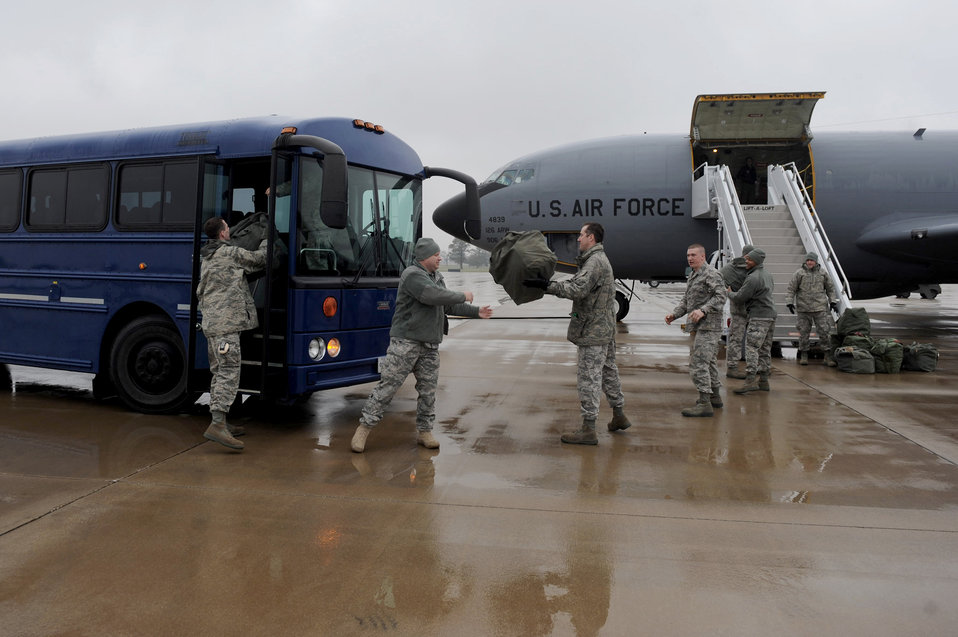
Guardsmen deploy in support of Operation Odyssey Dawn

Members of the Illinois Air National Guard's 126th Air Refueling Wing load bags onto a KC-135 Stratotanker March 25, 2011, at Scott Air Force Base, Ill., in preparation for deployment in support of Operation Odyssey Dawn.